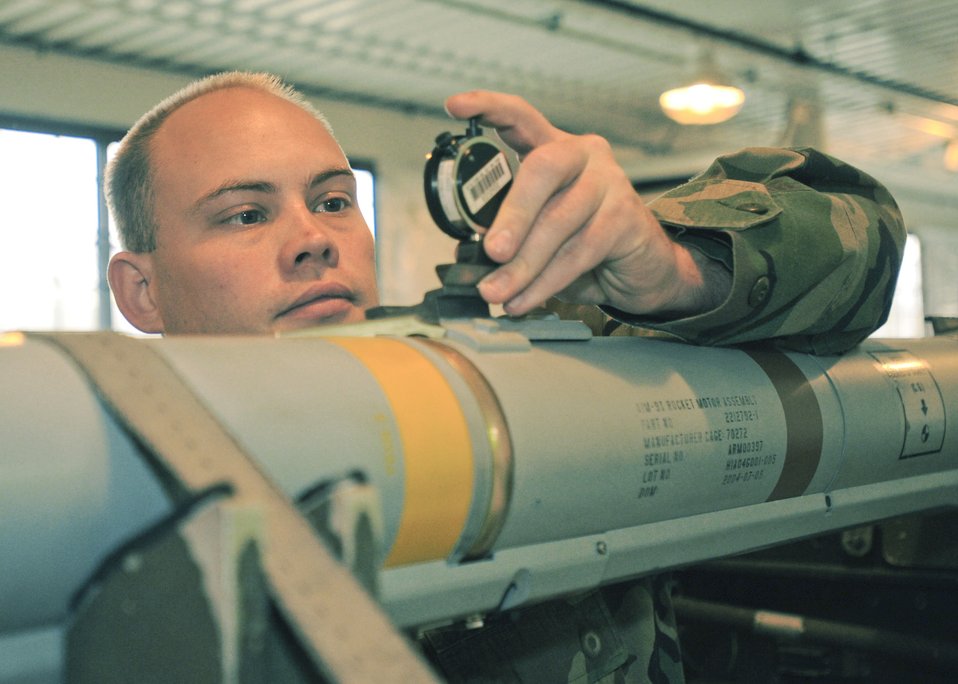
Arctic Warrior awarded DOD munitions honor

Staff Sgt. Wayne Zuiderhof checks the depth value on the forward hanger of a weapon May 14 at Elmendorf Air Force Base, Alaska. Sergeant Zuiderhof, assigned to the 3rd Equipment Maintenance Squadron Munitions Flight, was one of two recipients of the 2007 AIM-9X Cutting Edge Award.